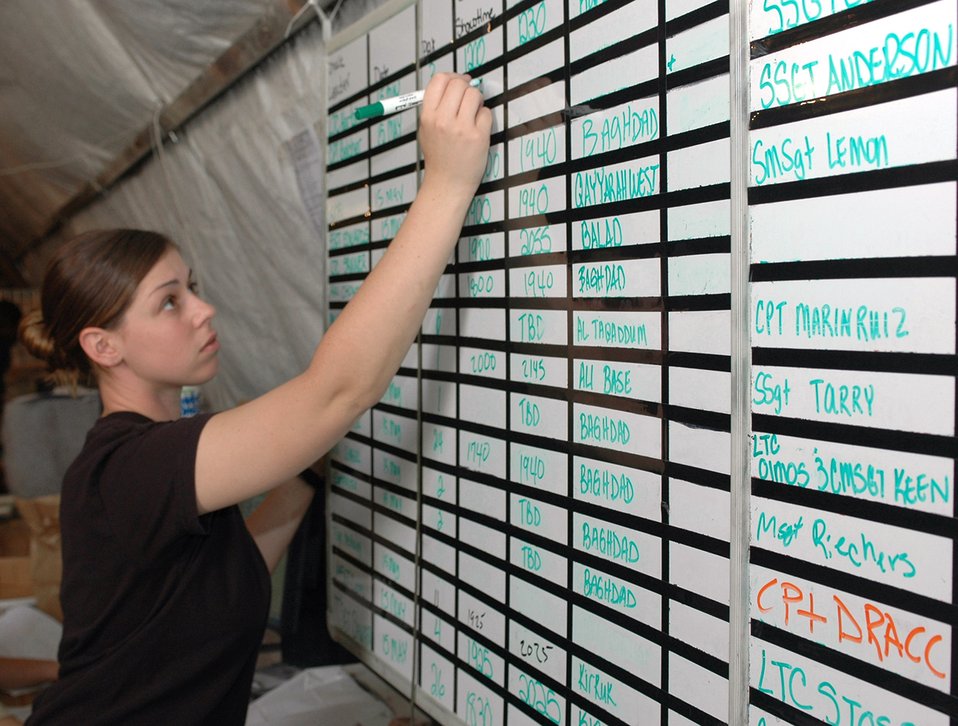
Team preps servicemembers heading to forward locations

Senior Airman Karen Fox schedules times servicemembers will process through the Expeditionary Theater Distribution Center to receive mobility gear and individual body armor. The ETDC is the largest center in the area of responsibility, and thousands of U.S. servicemembers are issued mobility bags, body armor and first aid kits on their way to forward deployed locations. Airman Fox is a mobility specialist with the 379th Expeditionary Logistics Readiness Squadron.